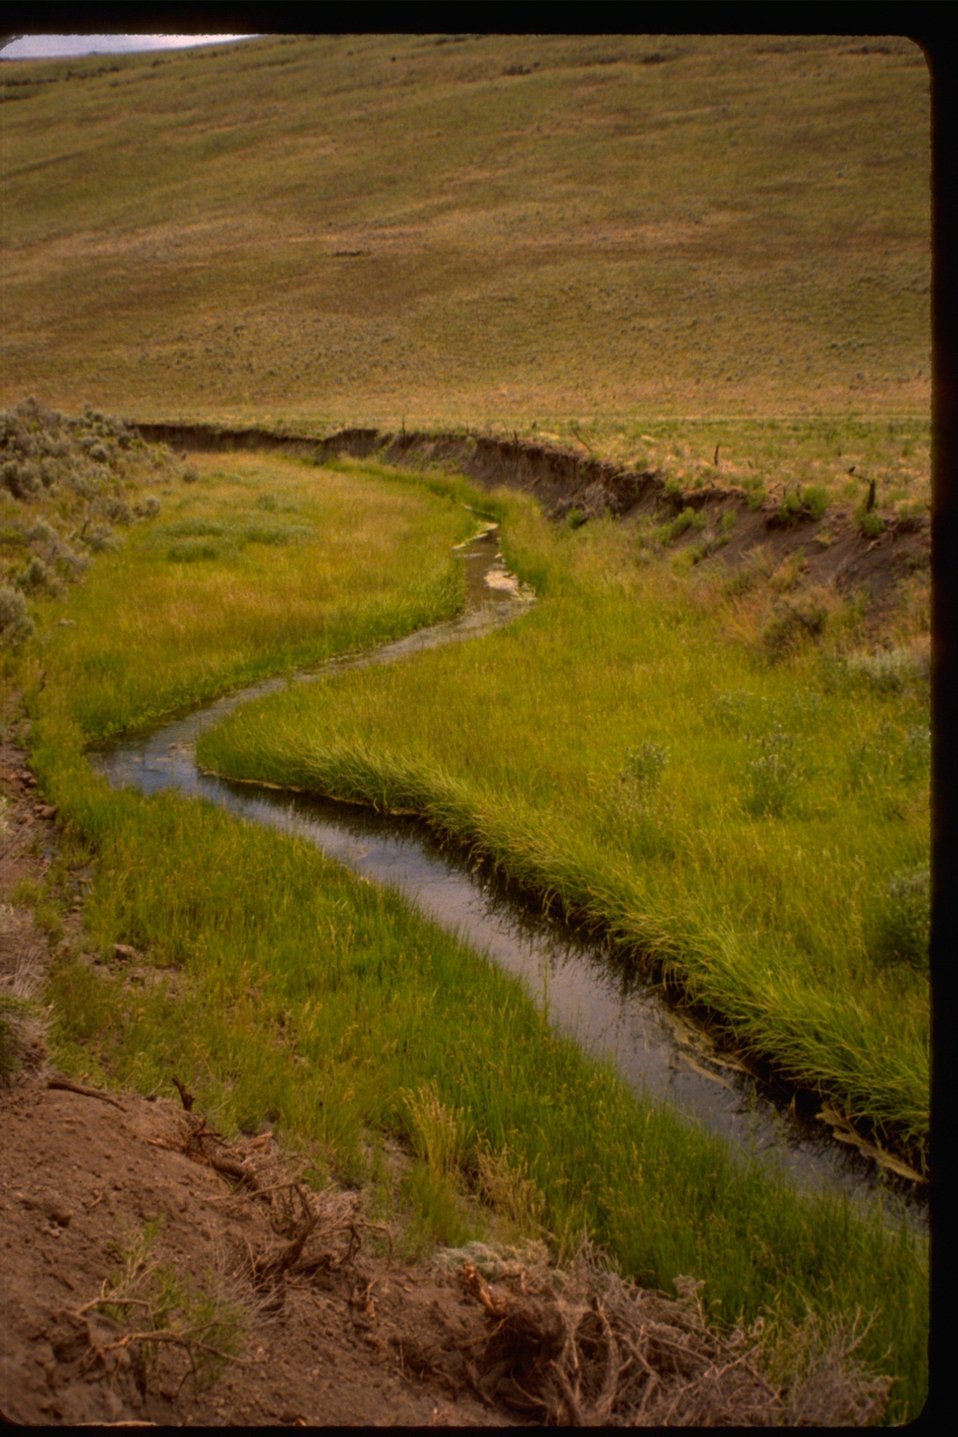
View of the riparian and recovery are of Skull Creek in the south Steens area.